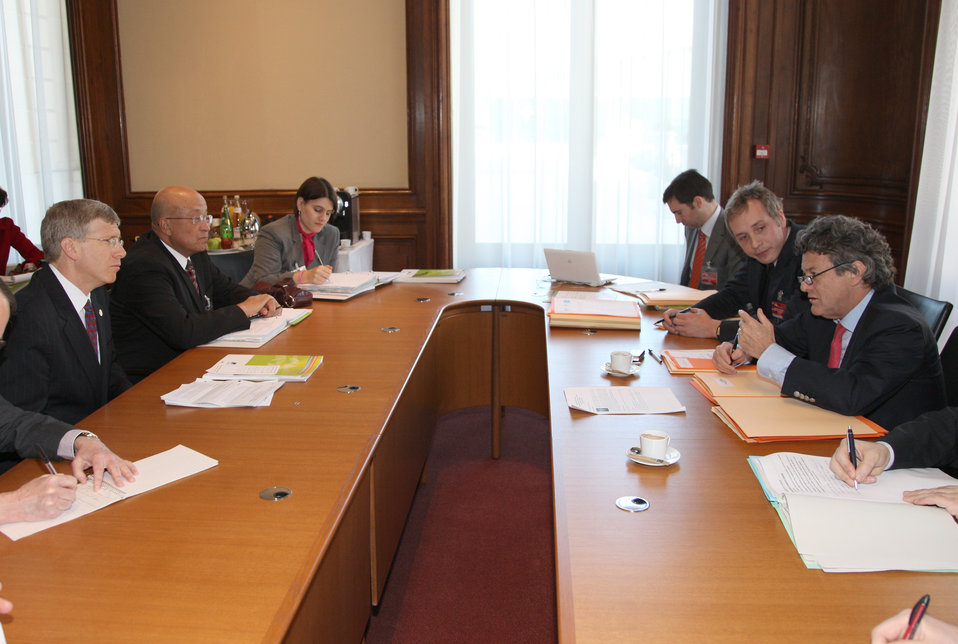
5C3K3716 copy